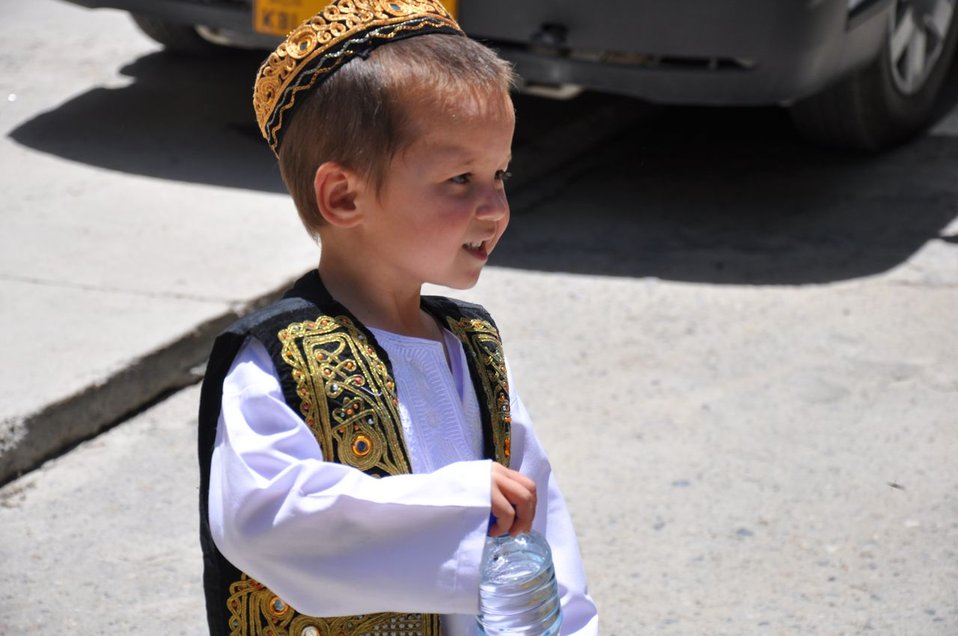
Mother's Day in Afghanistan